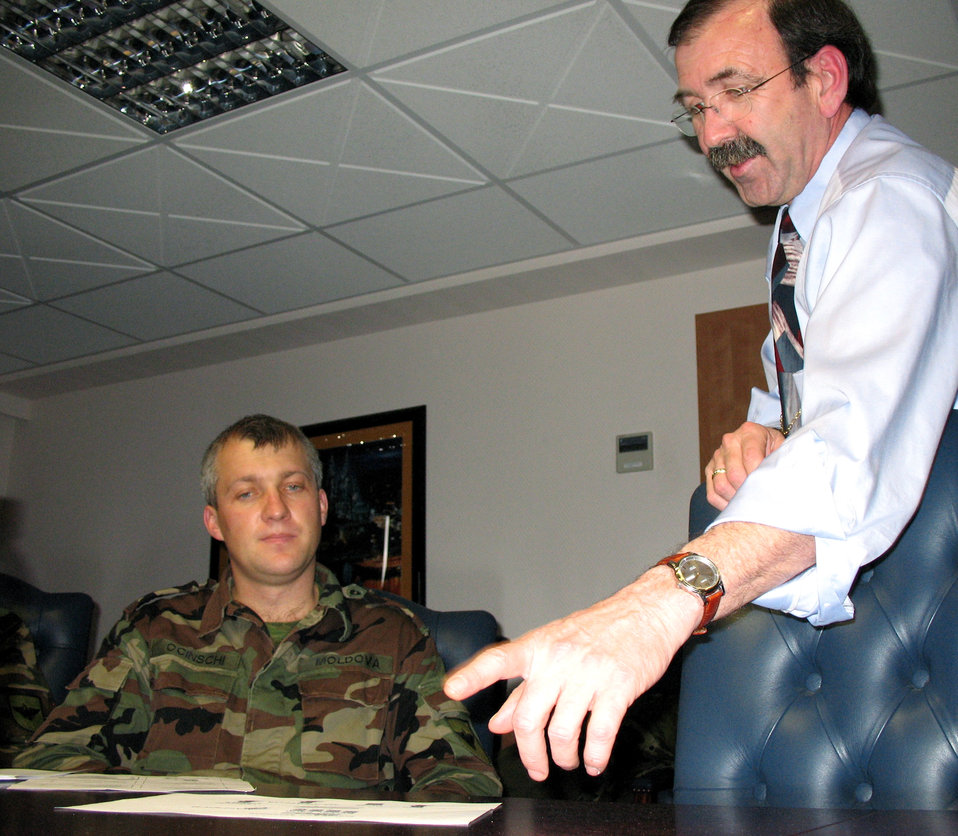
Moldovan officers visit Ramstein

Milan Christi, with the United States Air Forces in Europe personnel office at Ramstein Air Base, Germany, briefs Lt. Colonel Sergiu Ocinschi, a Moldovan army communications officer, about the role of contractors in the Air Force. Colonel Ocinschi and three other officers from Moldova visited Ramstein to learn about the U.S. Air Force human resources program since their country's military is currently undergoing changes.